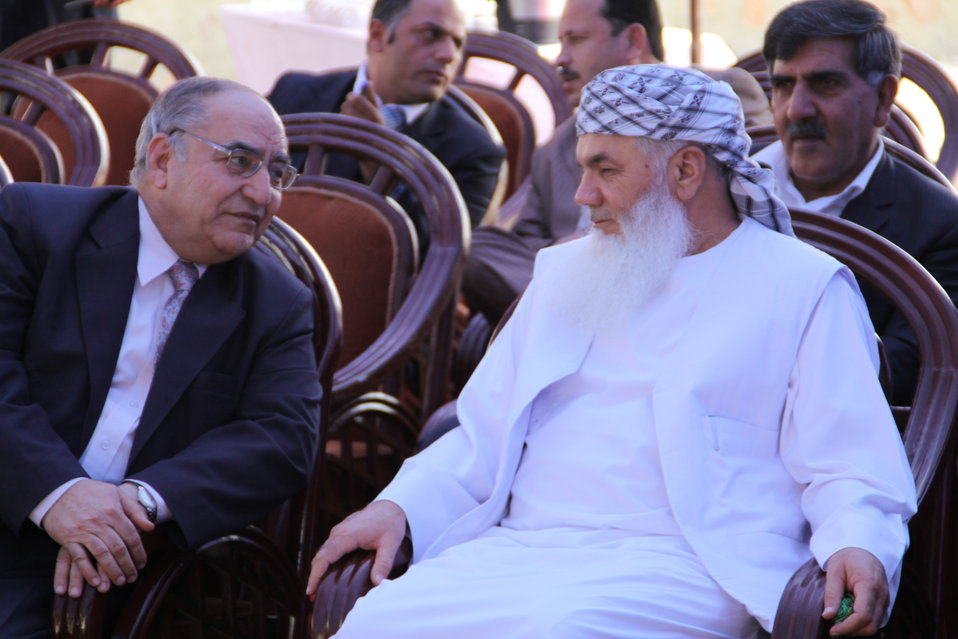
105 MW Tarakhil Power Plant Handover